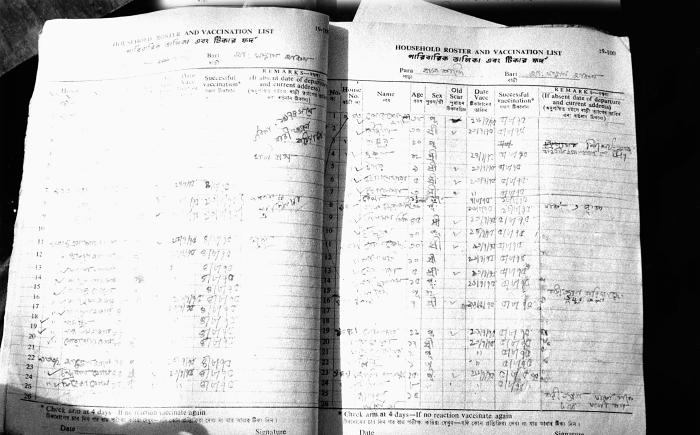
This was a detailed view of a 'Containment Book' page listing data pertaining to those community homes that had been visited, and the finds uncovered. This book recorded all of the names of anyone living in, or near an infected home, and subsequently all those listed were vaccinated against smallpox. Those vaccinated were followed until a 'successful' vaccination was observed. The keeping of detailed records was extremely important, and is one of the hallmarks of properly practiced epidemiologic science. Smallpox cases that were uncovered had to be followed to a successful outcome, as well as anyone associate with close contact with any confirmed smallpox case. No matter even if it was a single case, all such disease was treated as an emergent situation, and once located were documented and tracked using methods such as 'mapping'.